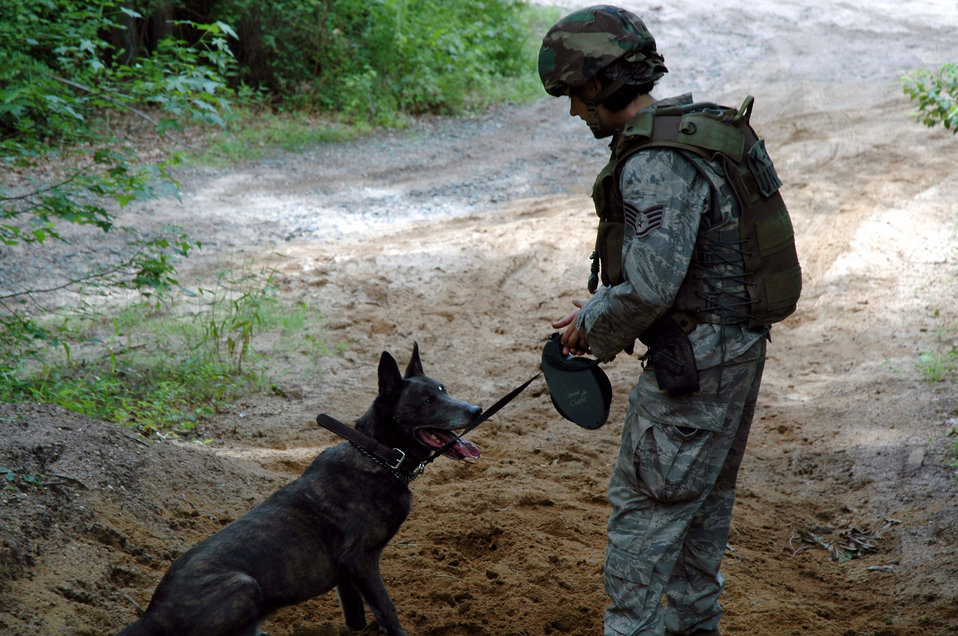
Teaching K-9 detection tactics

Staff Sgt. Kristyne Feldman and her military working dog, Berry, practice detection techniques during training in the Air Force Phoenix Warrior Training Course July 10 at Fort Dix, N.J. Phoenix Warrior is taught by members of the Air Force Expeditionary Center's Expeditionary Operations School and the 421st Combat Training Squadron. Sergeant Feldman is from Royal Air Force Lakenheath, England.